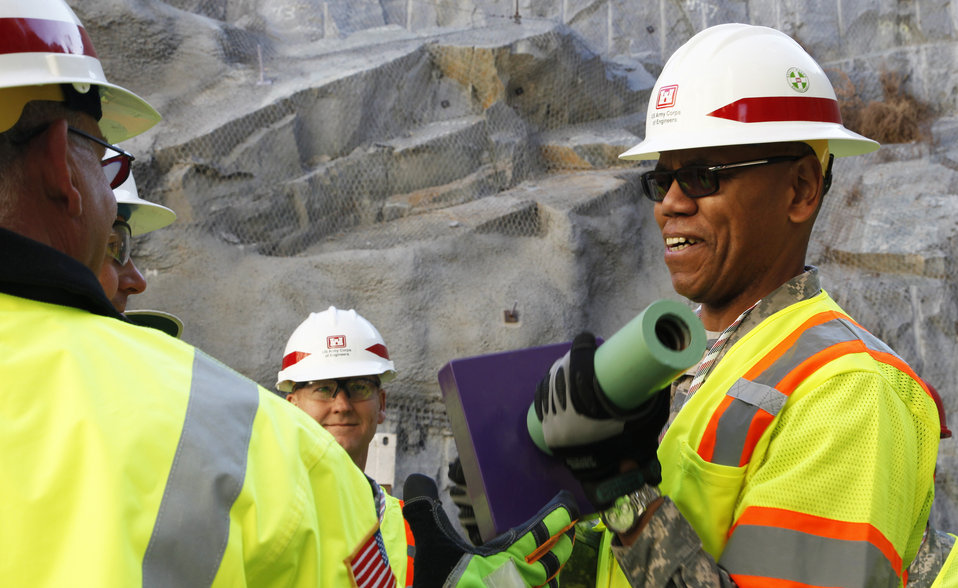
Gate support structure work continues at Folsom spillway project

Commanding general of the U.S. Army Corps of Engineers’ South Pacific Division, Brig. Gen. Dave Turner, holds a sample rock bolt during a visit to the construction site for the Folsom Dam auxiliary spillway in Folsom, Calif., Jan. 22, 2014. Rock bolts are used to improve slope stability and reinforce the spillway channel wall during excavation.